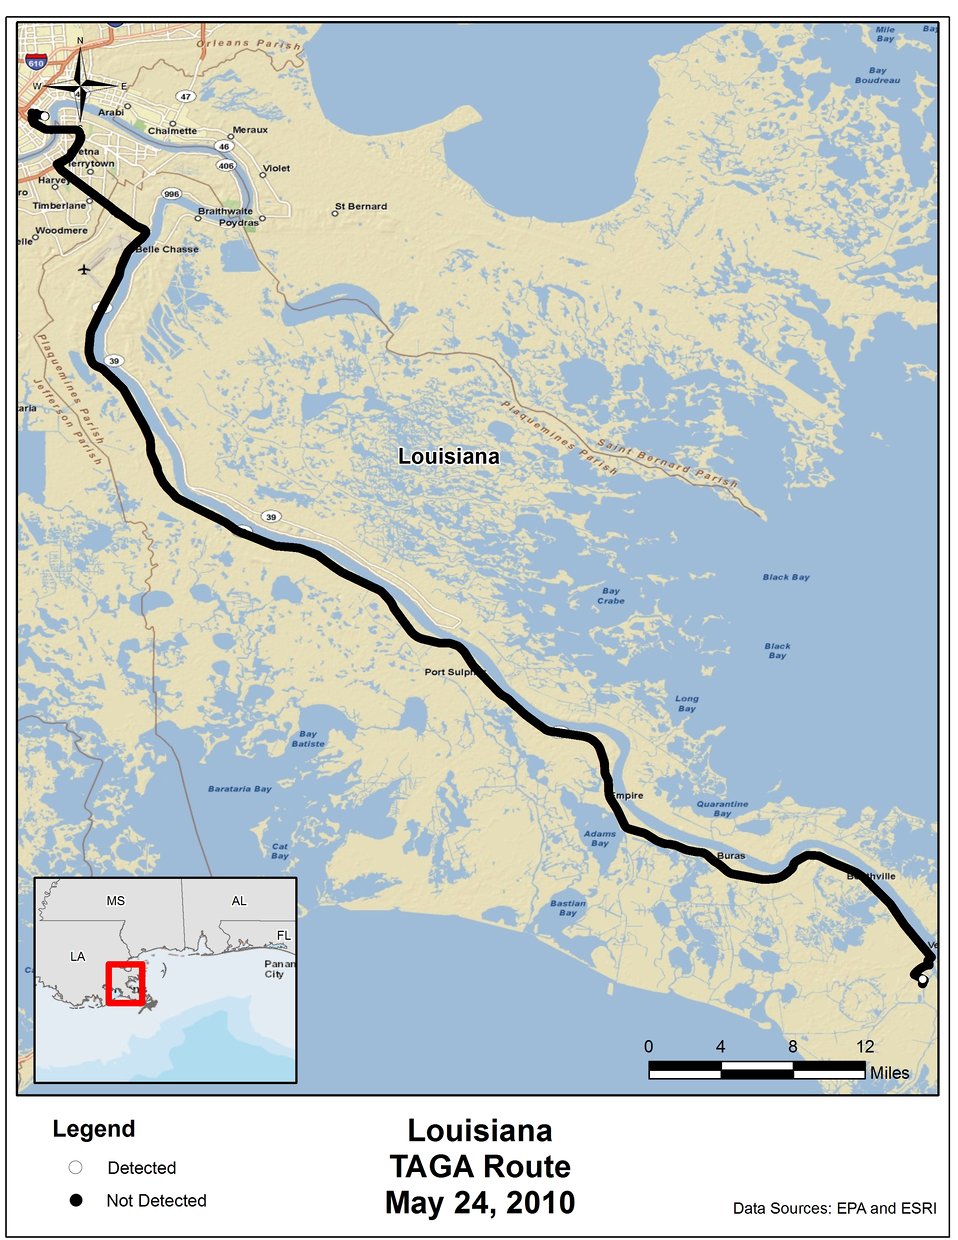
EPA TAGA Air Monitoring Locations May 24, 2010